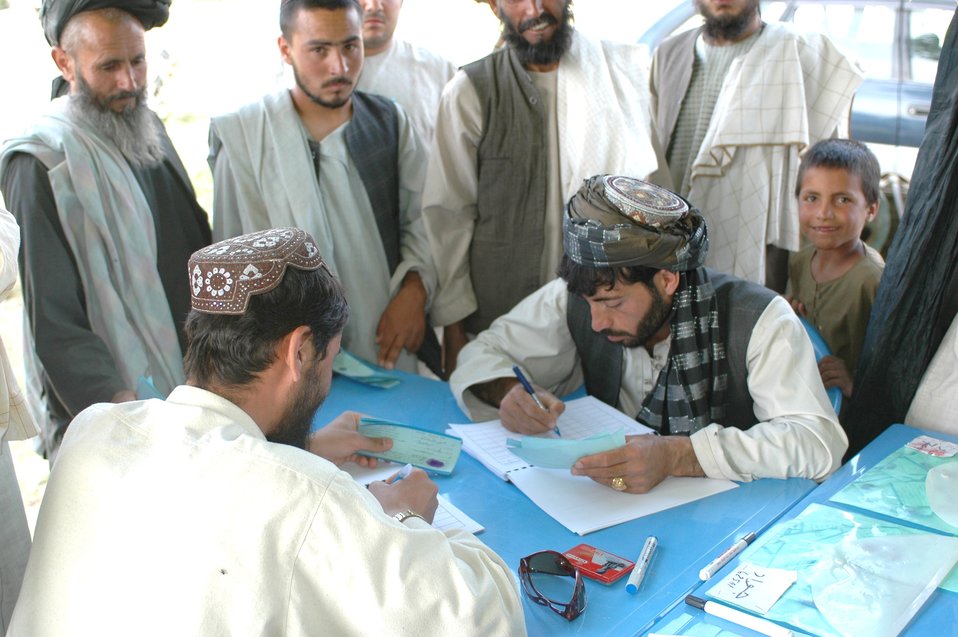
Dr Shah Visits Argandab April 10, 2010